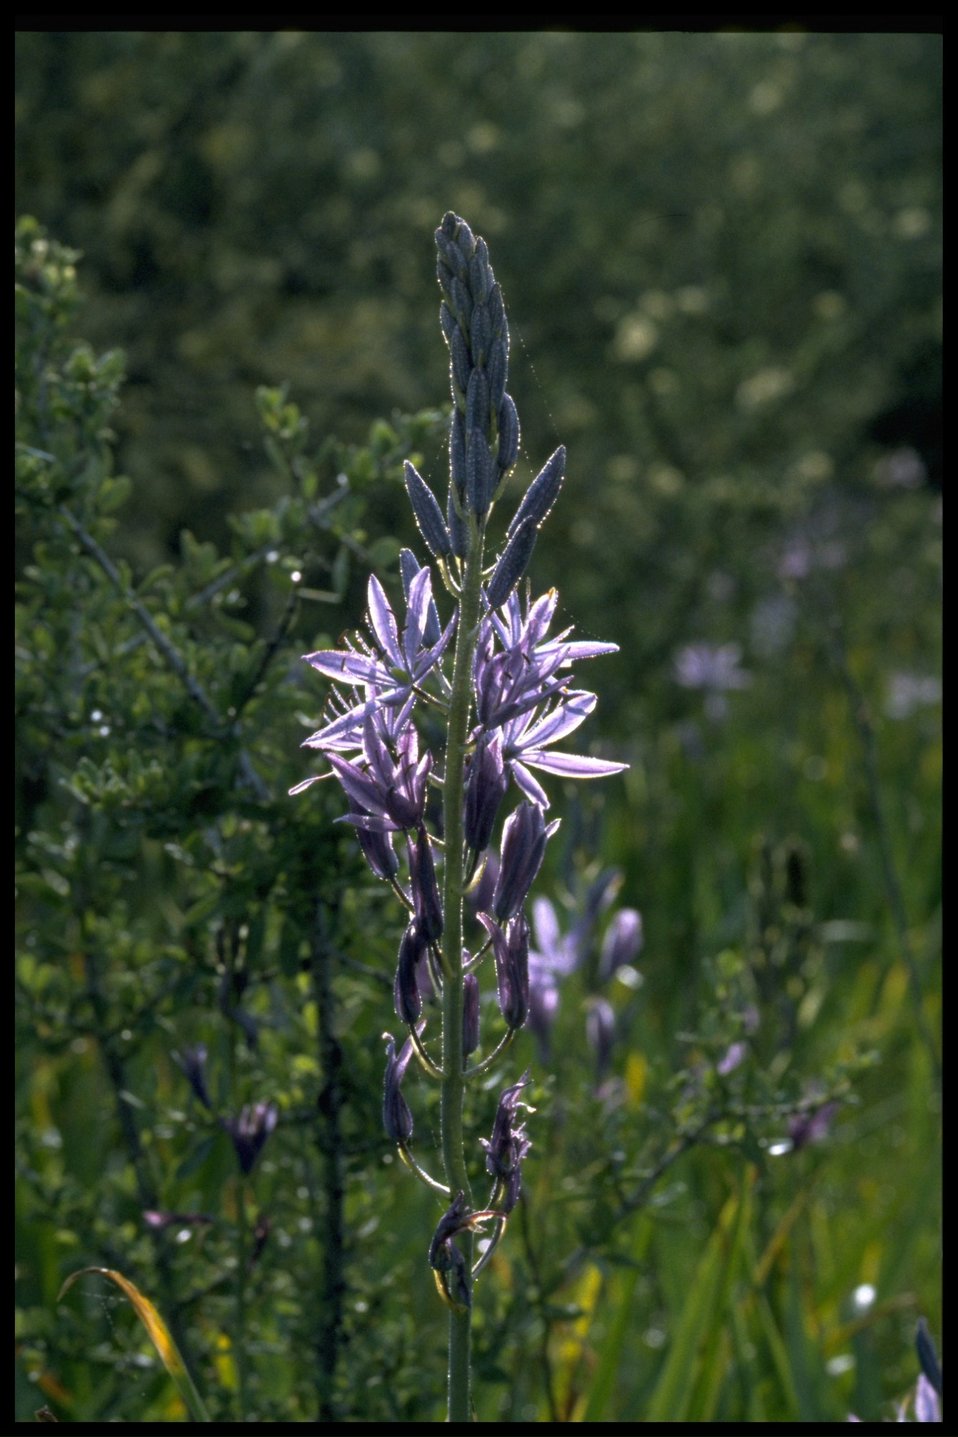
Medium shot of Camassia quamash.